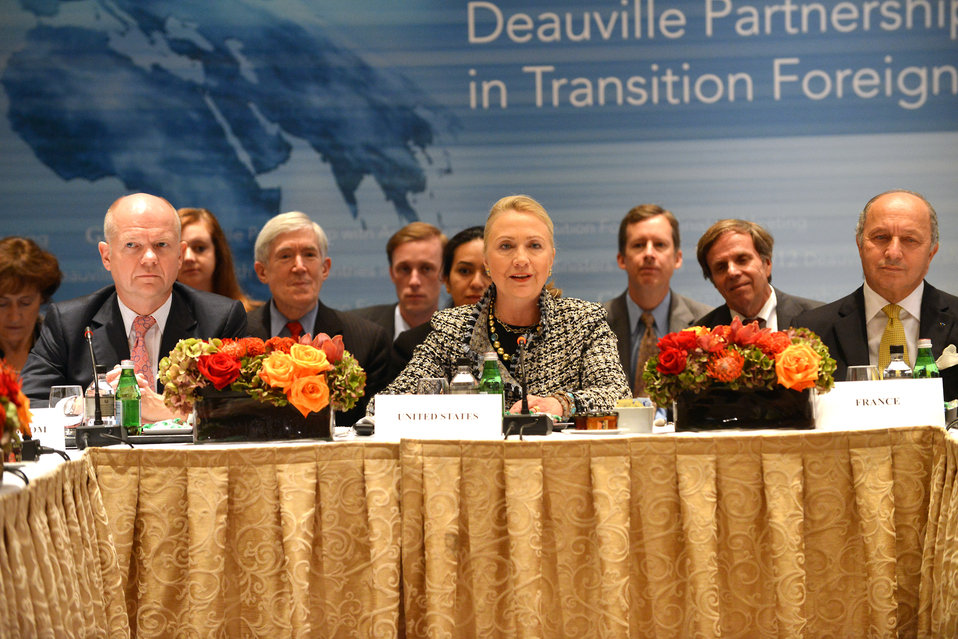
Secretary Clinton Hosts G8 Deauville Partnership with Arab Countries in Transition Foreign Ministers Meeting

U.S. Secretary of State Hillary Rodham Clinton hosts a G8 Deauville Partnership with Arab Countries in Transition Foreign Ministers Meeting, at the Waldorf Astoria in New York City, September 28, 2012.